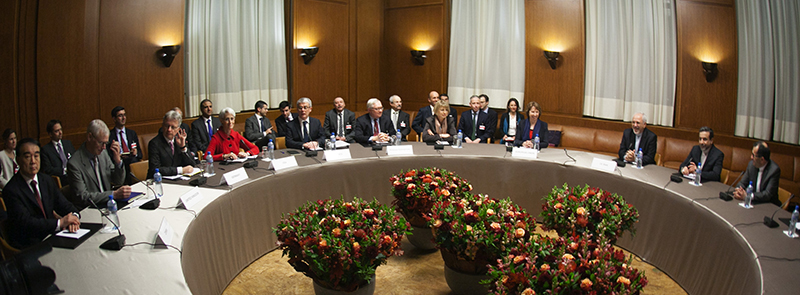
Under Secretary Sherman Leads the U.S. Delegation to the P5 1 Talks With Iran

Under Secretary of State for Political Affairs Wendy Sherman leads the U.S. delegation to the P5 1 talks with Iran in Geneva, Switzerland, on November 20, 2013.